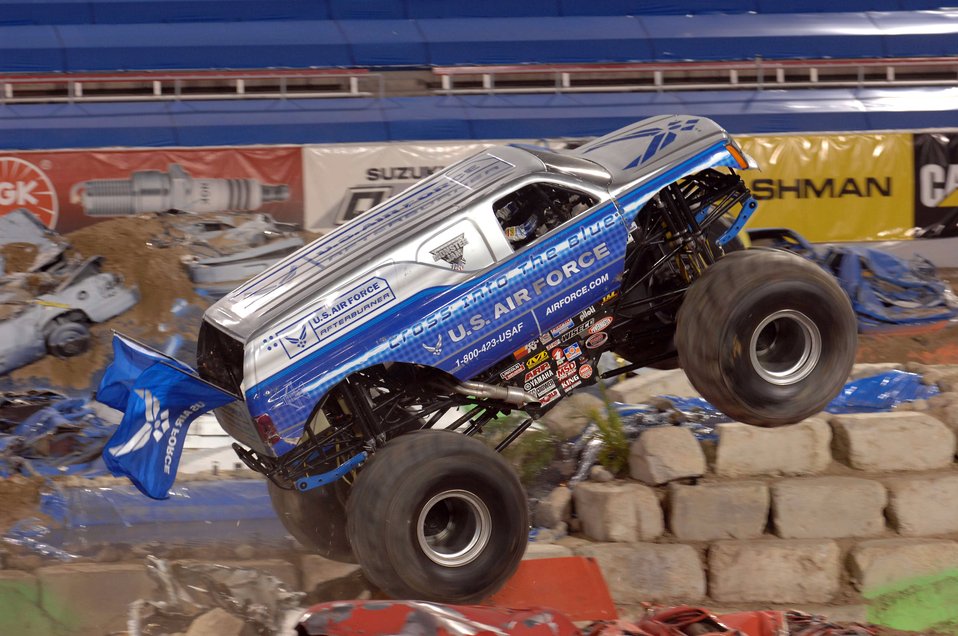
Busting through the course

Damon Bradshaw, driver of the U.S. Air Force Afterburner monster truck, rumbles through the obstacle course at the Monster Jam World Finals March 29 in Las Vegas.